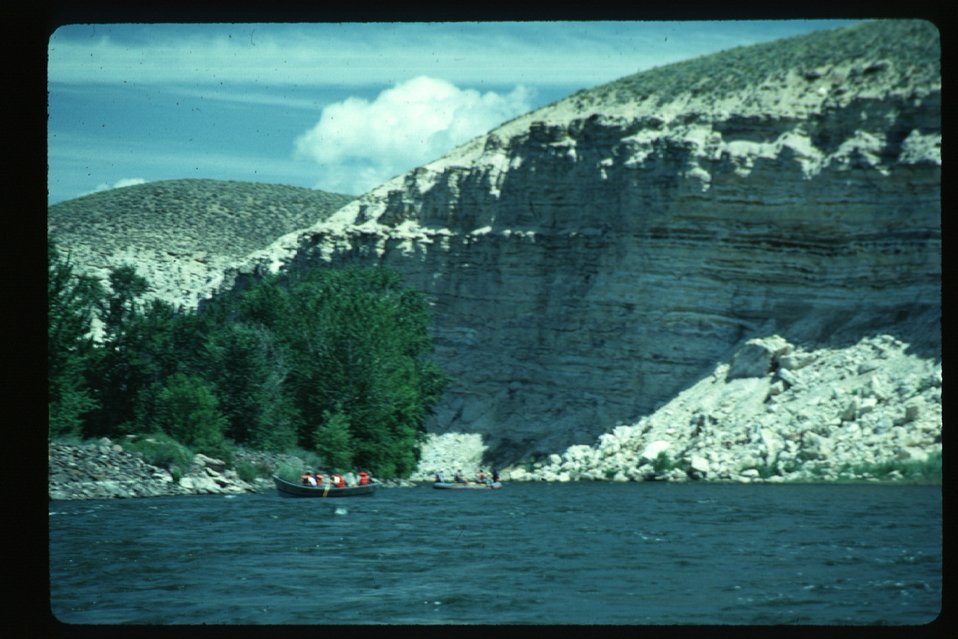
White water rafting South Fork of Snake River Idaho Falls Field Office USRD Upper Snake River District